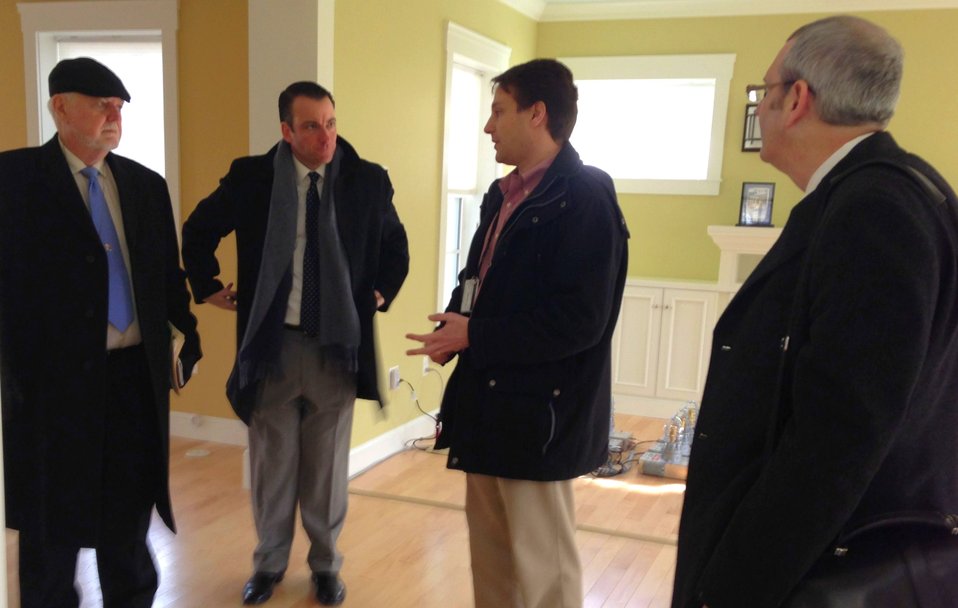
Kansas Tours NZERTF

Dr. Dave Yashar (Right Center) of the NIST Engineering Lab leads a tour of the NIST Net-Zero Energy Residential Test Facility (NZERTF) for Dr. Michael Branicky (Far Right), Dean of Engineering at the University of Kansas, Jack Cline (Center Left), Director of Federal Relations at the University of Kansas, and Dr. Robert Honea (Far left), Director of the University of Kansas Transportation Research Institute.